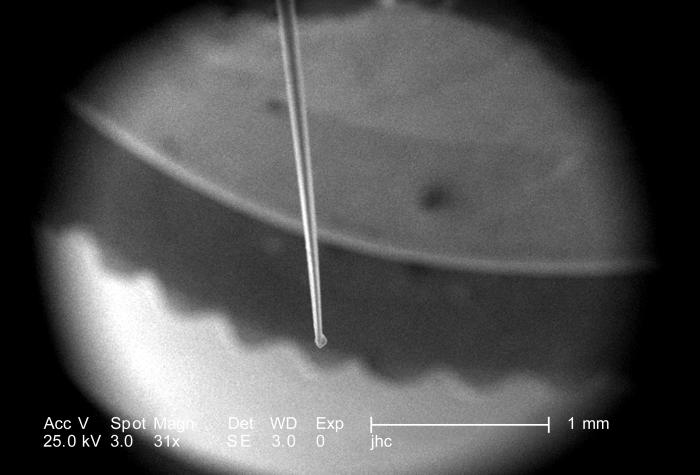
Under a low magnification of 31X, this scanning electron micrograph (SEM) focused on the distal tip of a female 'velvet ant's', Dasymutilla sp., stinger. Note that the very tip of the stinger is encased in a bulbous sheath.